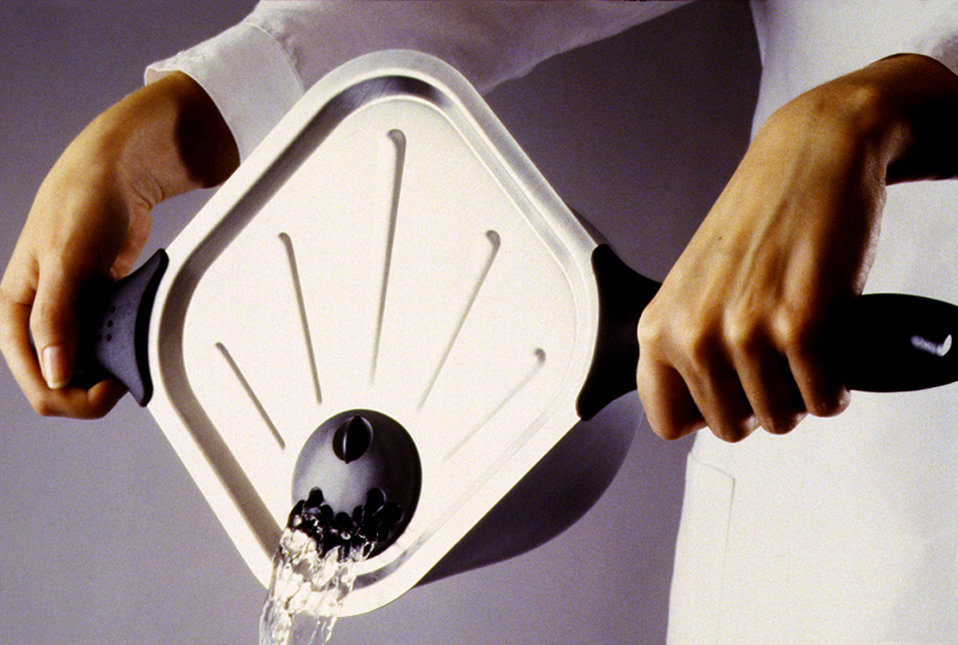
This was one of six images (PHIL# 9125 - 9130) depicting an Allegro� Cookware pot by Mirro�, the design of which was a radical departure from traditional cooking utensils. The square shape, unique lid and lightweight materials offered many ergonomic advantages. All the pots, pans and skillets were circular on their bottoms, gradually becoming square toward their tops. This cookware design made the most efficient use of standard round heat sources while at the same time offered greater cubic volume than a circular pot of the same height. As seen in this image, two of the corners created natural pouring spouts, a design consideration that was implemented in response to complaints common with more traditional round cookware. Note the larger, rubberized handles located on the alternate corners of the pot, which aligned and interlocked with the lid handles providing safe and balanced handling. Water was being poured from this pot using both corner handles.